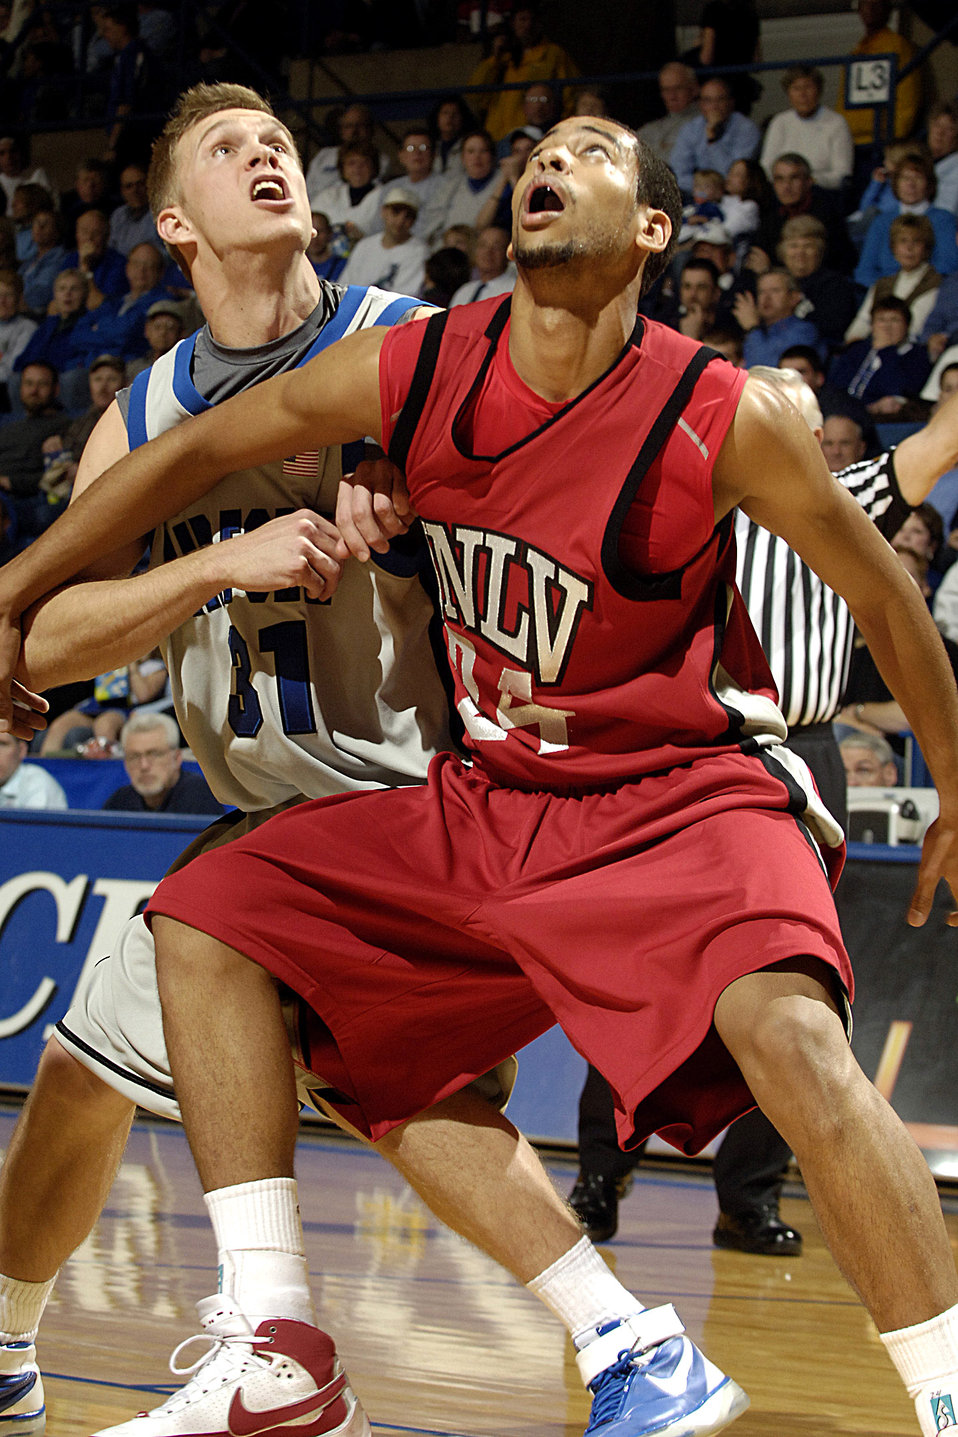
Academy defeats UNLV 65-53

U.S. Air Force Academy junior forward Matt Holland and senior center Keith Maren lend a hand to freshman guard Evan Washington as the Academy beat University of Nevada Las Vegas, 65-53, Jan. 13 in a Mountain West Conference game in Clune Arena at Colorado Springs, Colo. Maren chipped in with one of his best performances of the season, scoring nine points, grabbing a team-best six rebounds and handing out a career-best six assists. His six assists are the most by a Falcon this season.